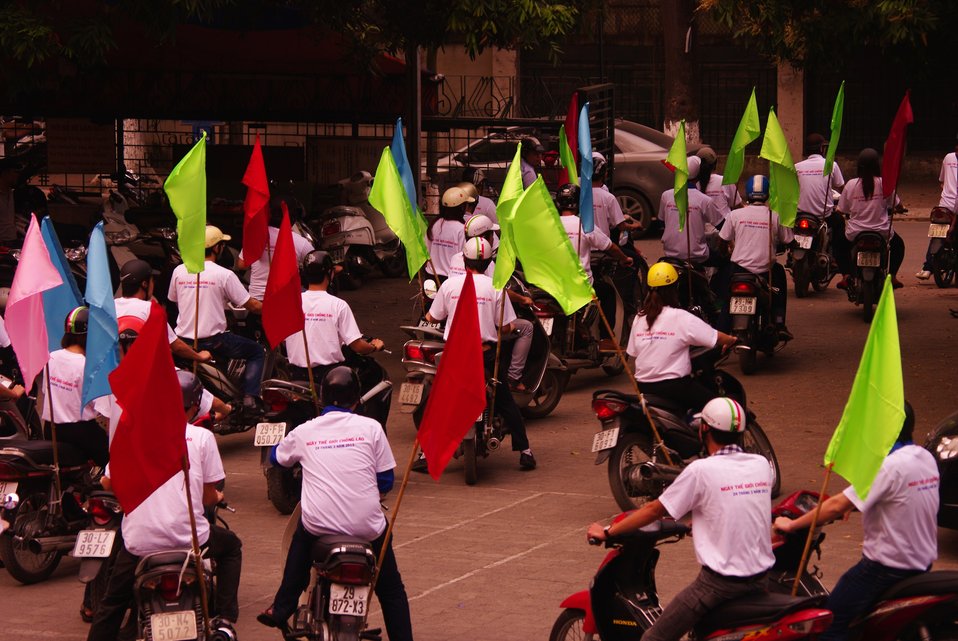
World TB Day in Hanoi: Students take to the streets with the message: Let's Stop TB in our Lifetime

March 23, 2013